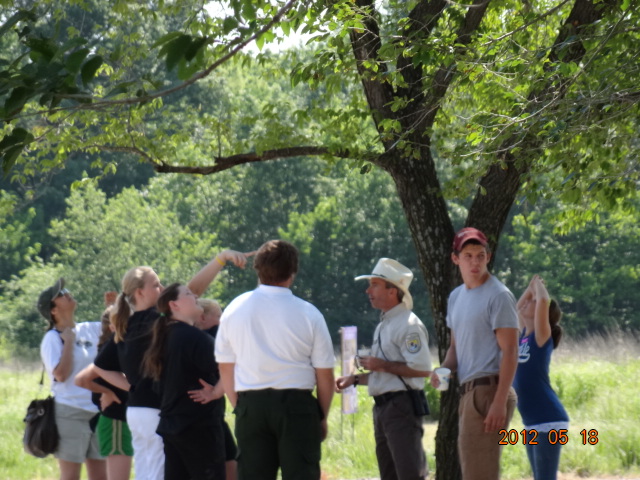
International Migratory Bird Day 2012

Marais des Cygnes National Wildlife Refuge